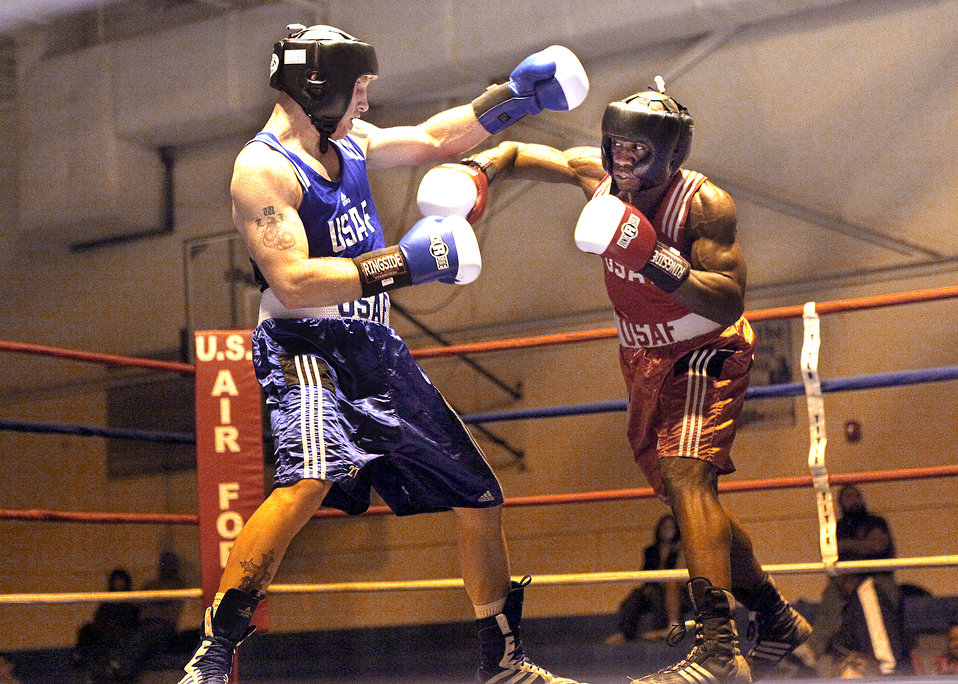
Air Force Box-offs

Light heavyweights Larry Hampp (left) and Gary Griffin compete during the Air Force Box-off tournament Jan. 22, 2011, at Lackland Air Force Base, Texas. Hampp won a unanimous decision from the judges. Hampp is from Ellsworth Air Force Base, S.D., and Griffin is assigned to Stewart Air National Guard Base, N.Y.